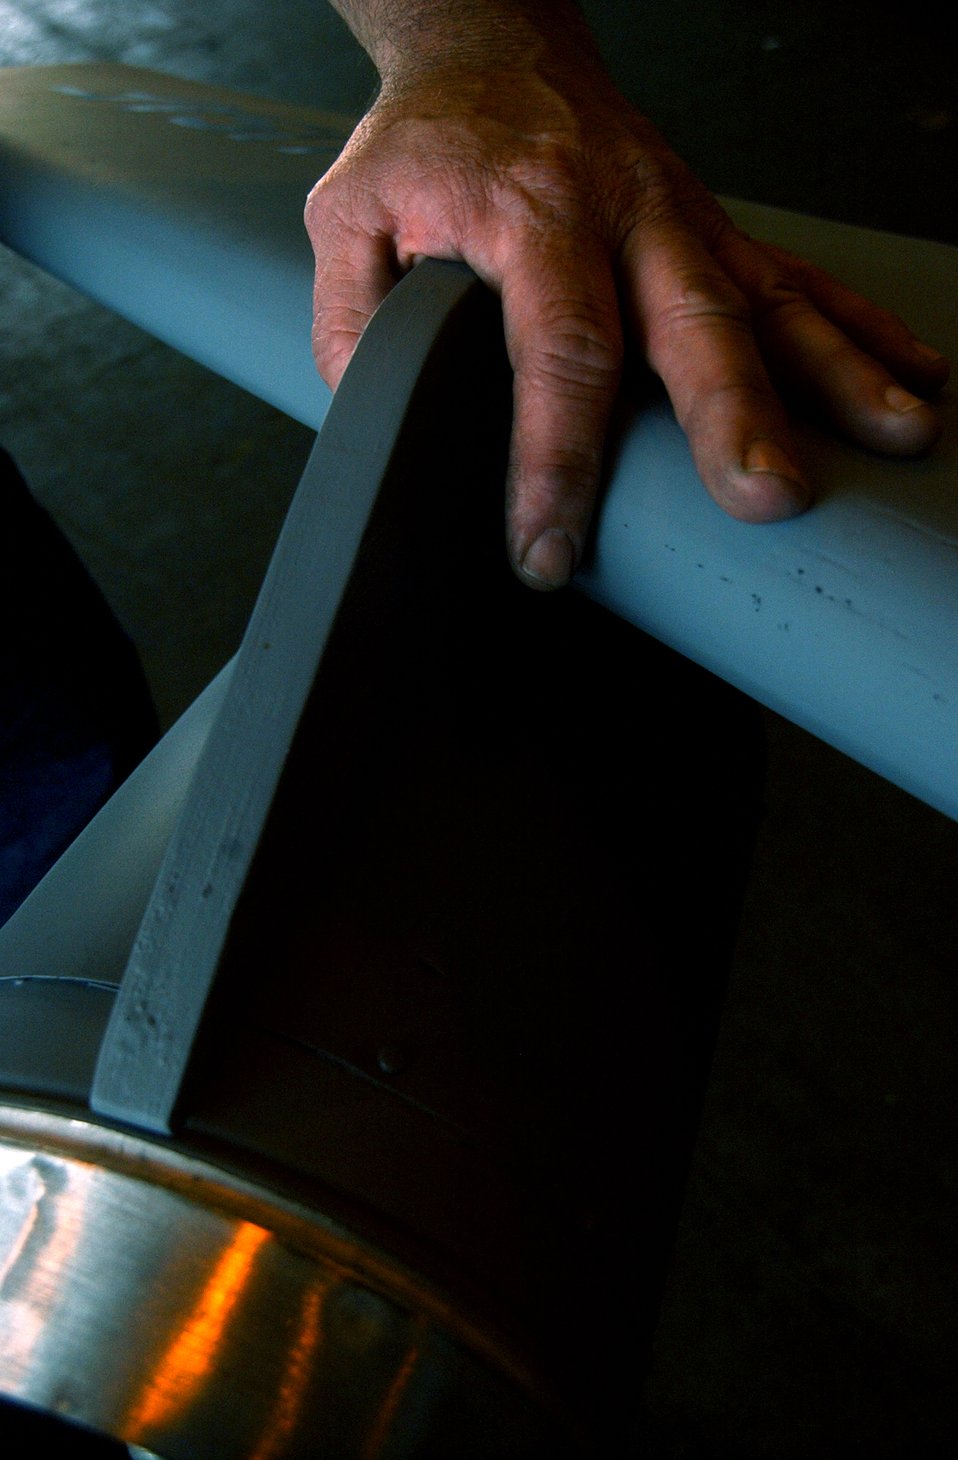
A father remembered

FAIRCHILD AIR FORCE BASE, Wash. -- The engine pylons on a replica of a KC-135 Stratotanker were individually crafted by Michael Doughty. The small tanker is dedicated to his father who died in a KC-135 accident May 16, 1966. It took him and his team of craftsman a month to refurbish the tanker in preparation for a local parade.